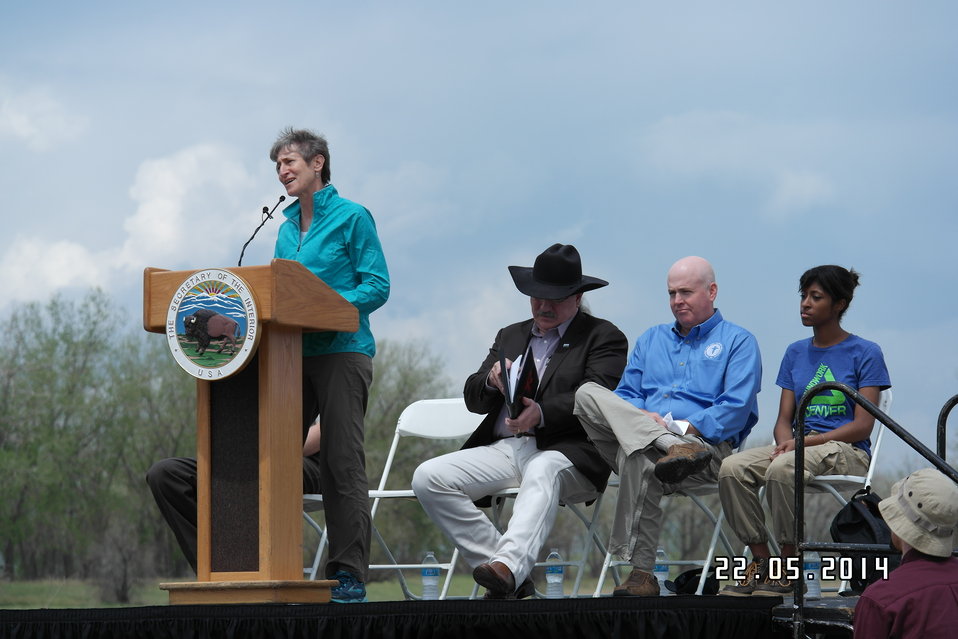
Secretary Jewell Announces $6.7 for Youth Conservation Jobs

Jewell made the announcement at an event at Rocky Mountain Arsenal National Wildlife Refuge outside Denver, Colorado, where she was joined by U.S. Department of Agriculture (USDA) Deputy Under Secretary for Natural Resources and the Environment Arthur “Butch” Blazer; Greg Knadle, Vice President for Government Relations of the National Fish and Wildlife Foundation (NFWF); Refuge Manager David Lucas and youth corps members of Groundwork Denver.